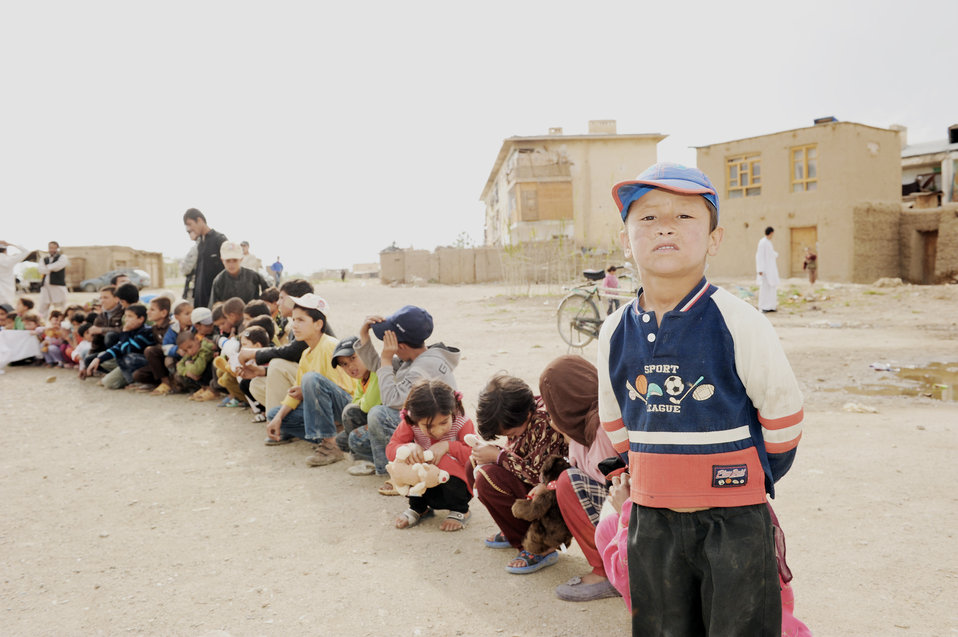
Operation Care

An Afghan child stops to pose for a picture while waiting to receive a stuffed animal during a recent Operation Care humanitarian mission April 5, 2010, outside of Bagram Airfield, Afghanistan.